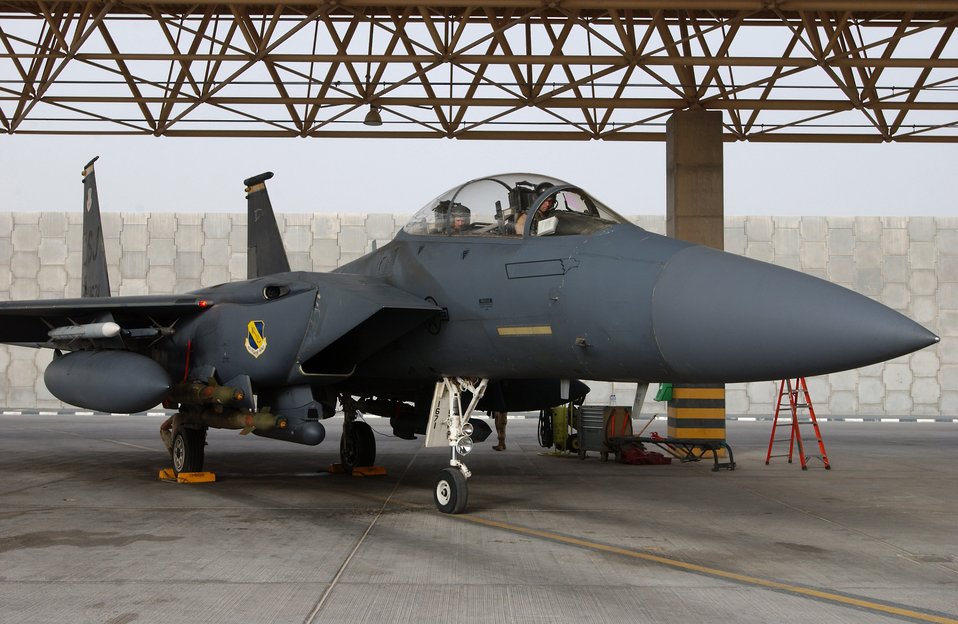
Combat mission

Maj. Jeff O'Donnell and 1st Lt. Nathan Rivinius stand by in their F-15E Strike Eagle and wait for the chocks to be pulled before a combat mission from a forward operating base in Southwest Asia Aug. 18. Major O'Donnell is a pilot and Lieutenant Rivinius is a weapons systems officer. They are deployed to the 335th Expeditionary Fighter Squadron from Seymour Johnson Air Force Base, N.C.